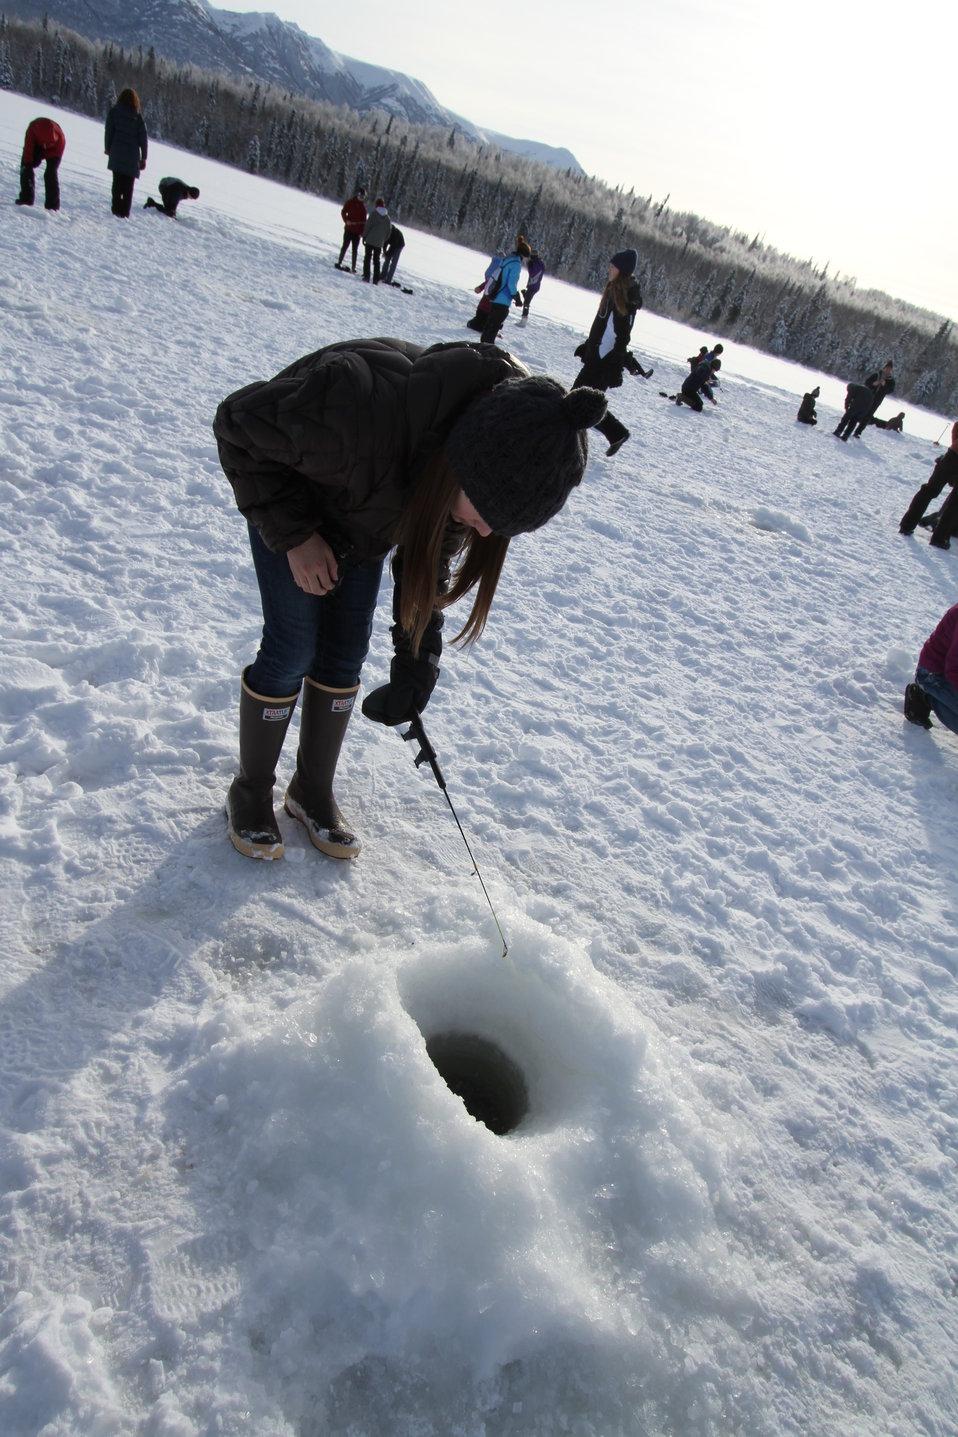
Connecting kids to fish via ice fishing!

Beach Lake ice fishing event Feb 2014. USFWS/Katrina Mueller